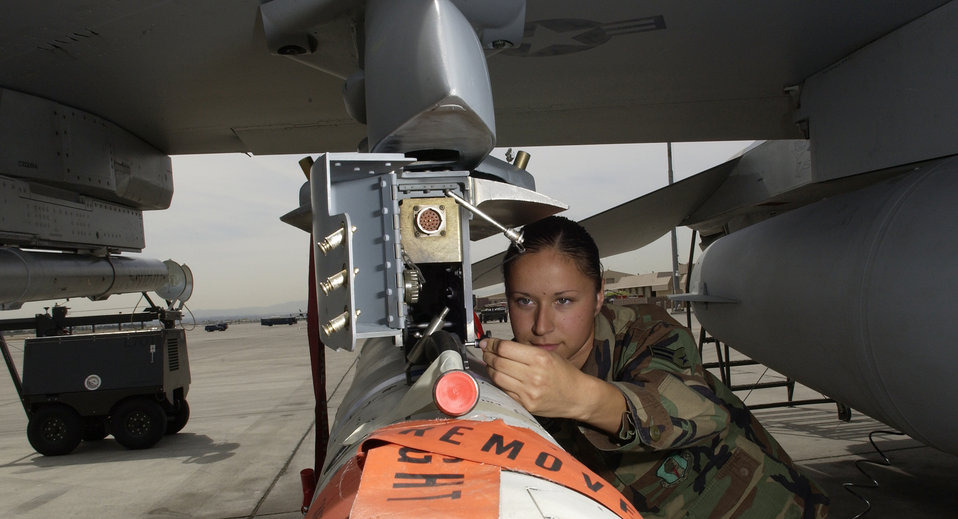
Missile unloading

NELLIS AIR FORCE BASE, Nev. -- Airman 1st Class Mabel Arreola unloads an AGM-88 high-speed anti-radiation missile from an F-16 Fighting Falcon after a training mission here March 18. She is a weapons loader assigned to the 35th Fighter Wing at Misawa Air Base, Japan.